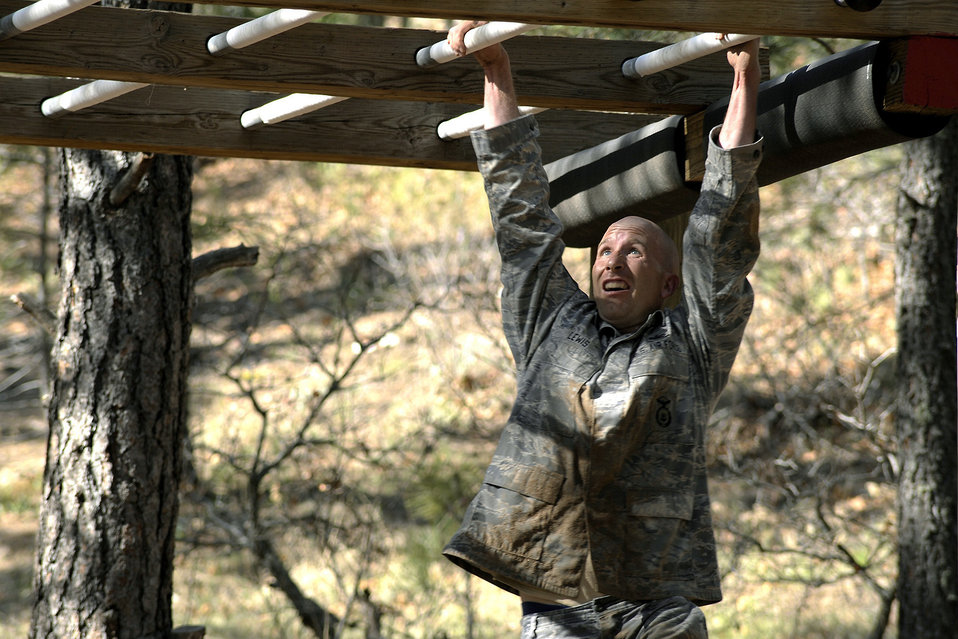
Security Forces Guardian Challenge

Staff Sgt. Andrew Lewis attacks an obstacle at the obstacle course trail at the U.S. Air Force Academy training area during the security forces competition May 18, 2010. He is a 50th Security Forces Squadron Guardian Challenge contender.